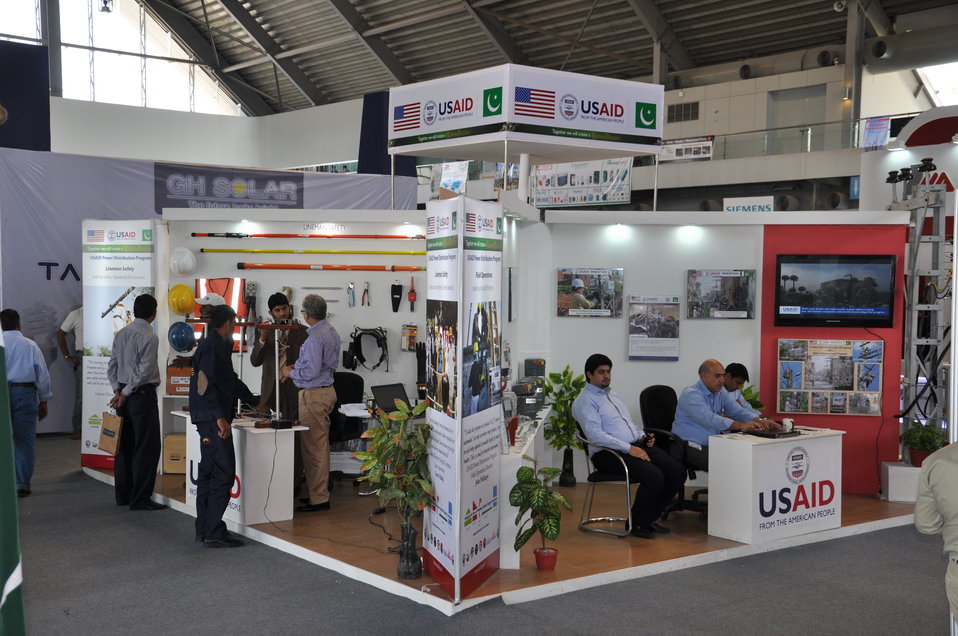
USAID participates in 11th International Pakistan Oil Gas Energy Exhibition

USAID PDP booth